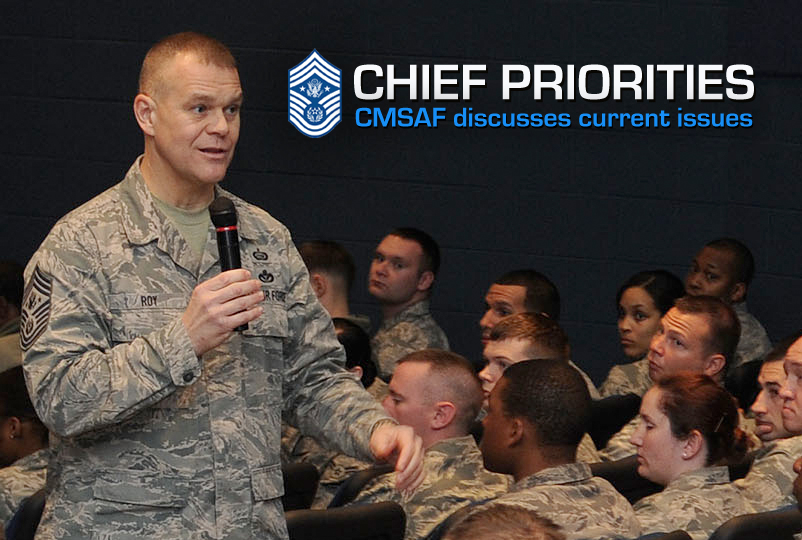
Chief Priorities